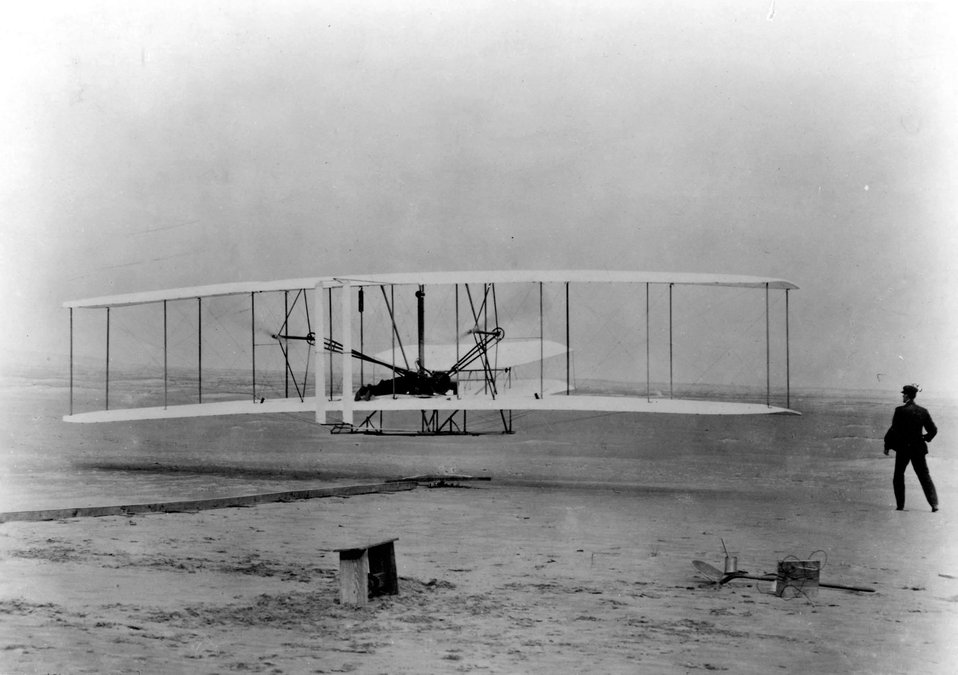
First flight

With Orville Wright at the controls, the Wright Brothers conduct the first flight by man with a motor driven, heavier-than-air machine Dec. 17, 1903, at Kill Devil Hills near Kitty Hawk, N.C.